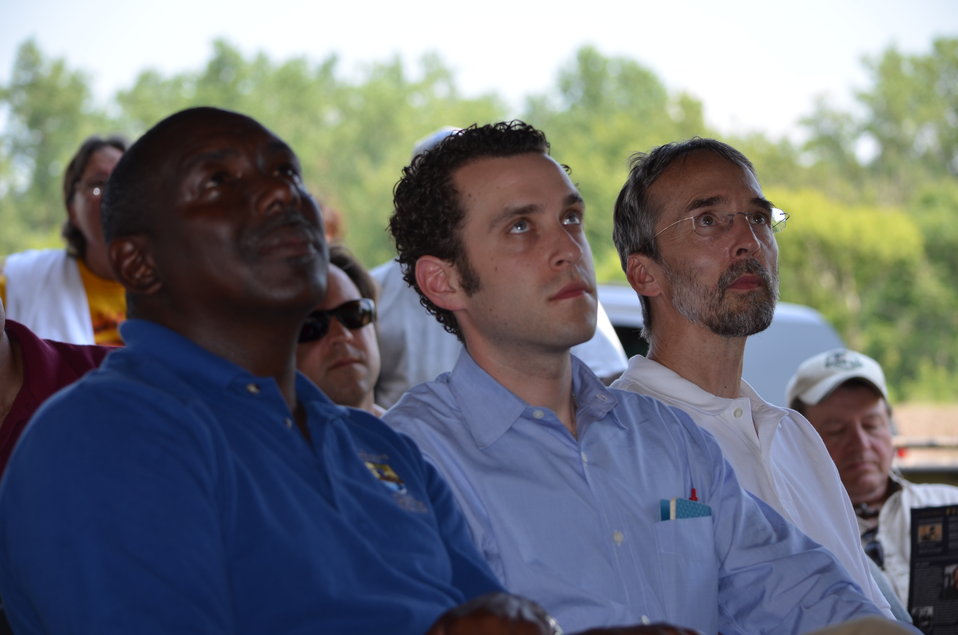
Service AD Migratory Birds Jerome Ford, Adam Schiff of Sen. Klobuchar's office, and Joe Hautman, 2012 Federal Duck Stamp artist.